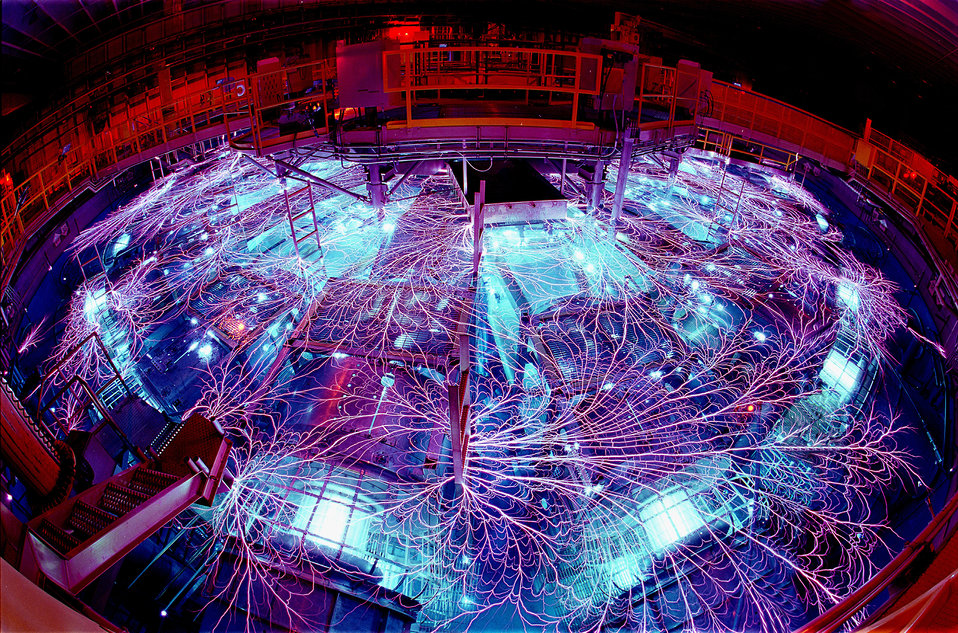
The Z machine, the largest X-ray generator in the world, is located in Albuquerque, New Mexico. As part of the Pulsed Power Program, which started at Sandia National Laboratories in the 1960s, the Z machine concentrates electrical energy and turns it into short pulses of enormous power, which can then be used to generate X-rays and gamma rays. Click on the image for a full size version. | Photo credit: Randy Montoya/Sandia National Laboratories.

Photo of the Week: September 21, 2012